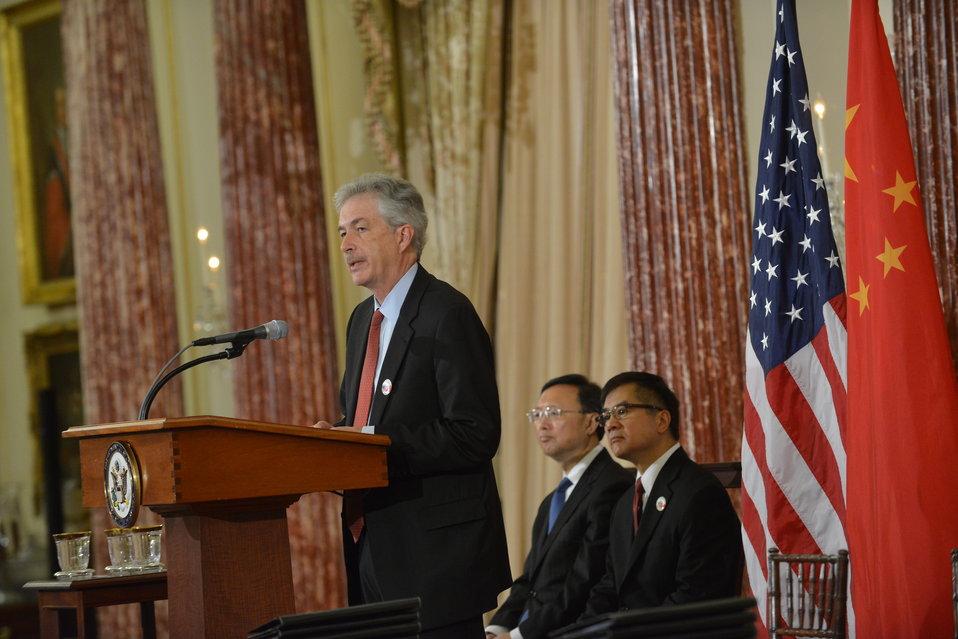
Deputy Secretary Burns Delivers Remarks at the U.S.-China EcoPartnerships Event

U.S. Deputy Secretary of State William Burns delivers remarks at an event for U.S.-China EcoPartnerships as part of the fifth round of the U.S.-China Strategic and Economic Dialogue at the U.S. Department of State in Washington, D.C., on July 11, 2013.